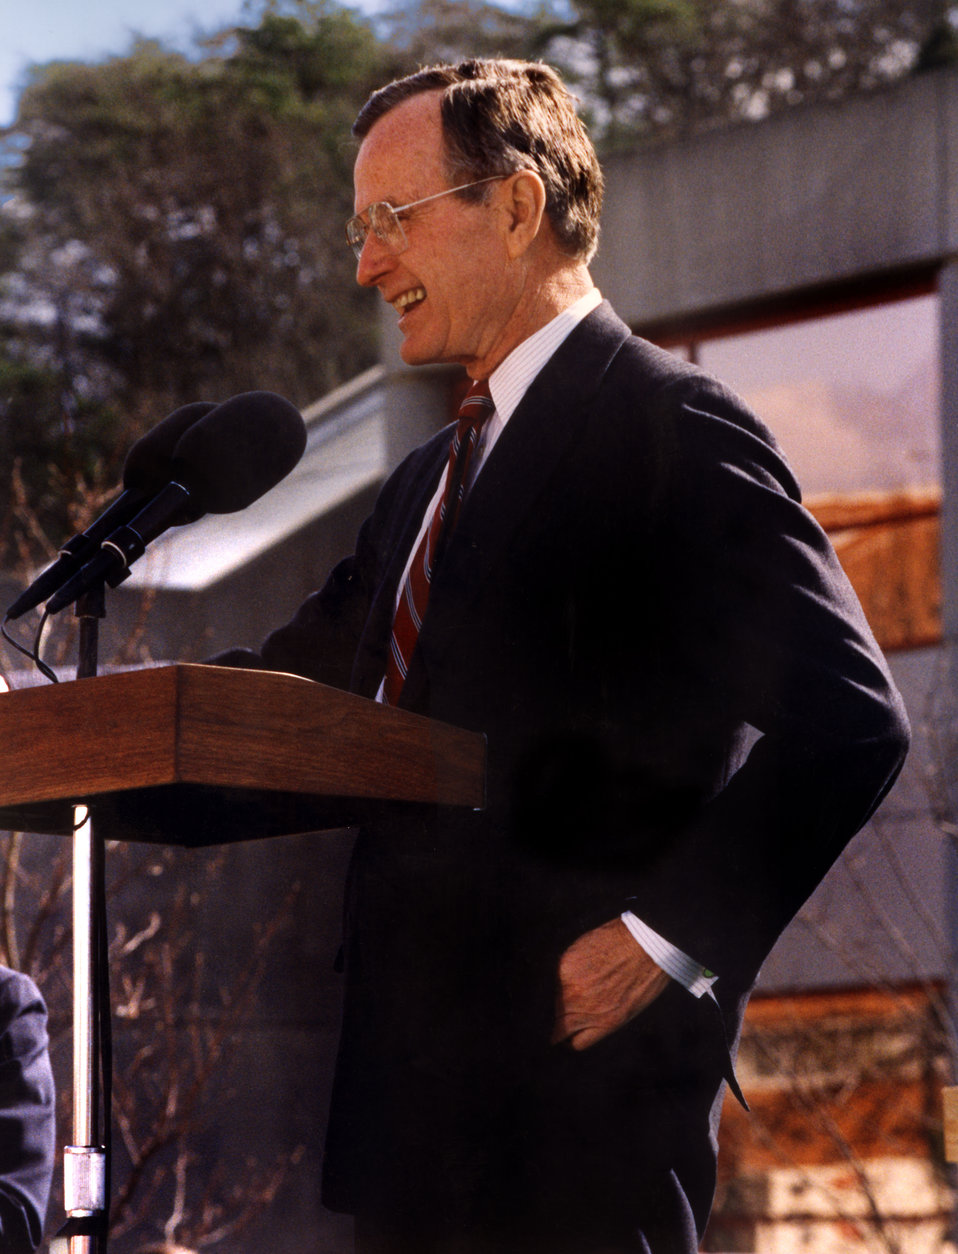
President George Bush visit to Oak Ridge National Lab

YP1992-2 DOE photo by Lynn Freeny

President George Bush visit to Oak Ridge National Lab in front of the High Temperture Materials Lab. Oak Ridge Tennessee 2-19-1992